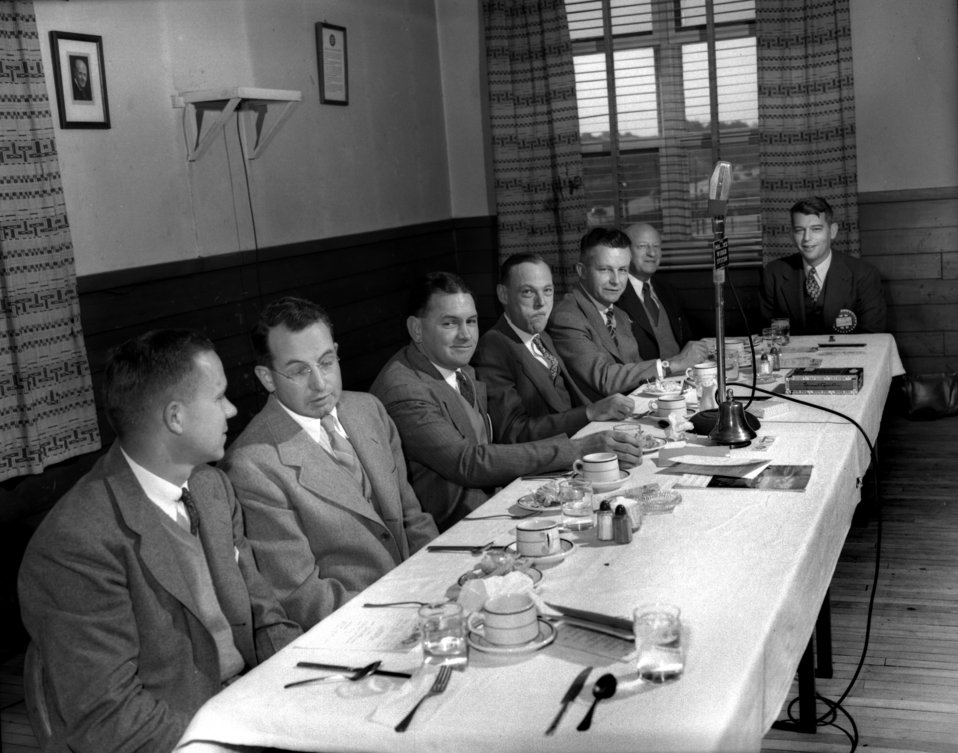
Rotary Club Meeting

426-2 DOE photo Ed Westcott
Oak Ridge Tennessee 1-15-1948